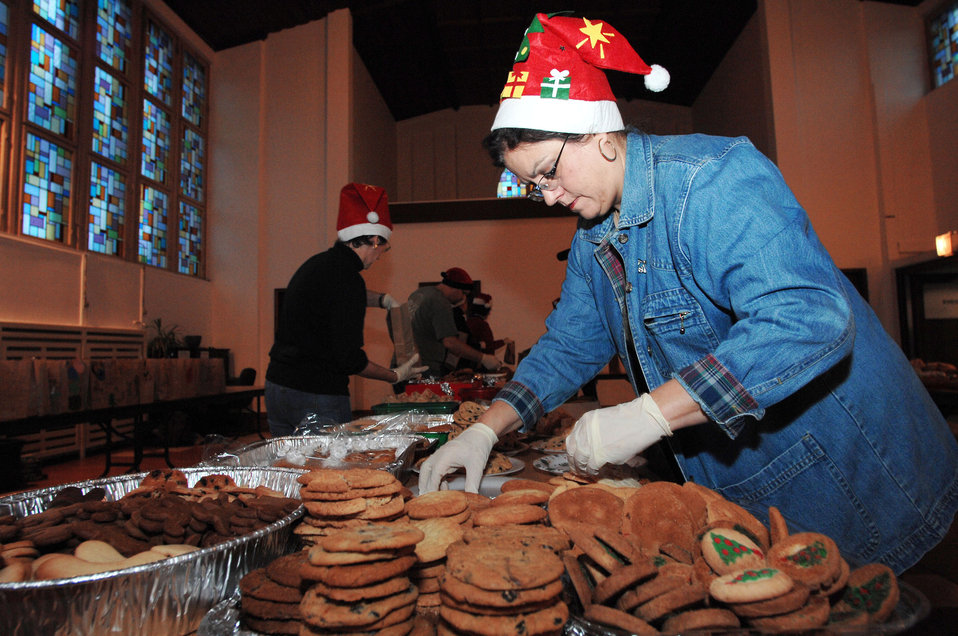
ROSC Cookie Drive

Ramstein Officer Spouses Club member Carol Ann Stenetz sorts baking dishes filled with cookies destined for single servicemembers living in the dormitories on Vogelweh and Ramstein Air Base, Dec. 10, 2009. The Ramstein Officer Spouses Club together with the Kaiserslautern Spouses Association and the Ramstein Enlisted Spouses Association collected more than 12,000 cookies to give to the more than 11,000 Airman who live in the dorms at the bases.